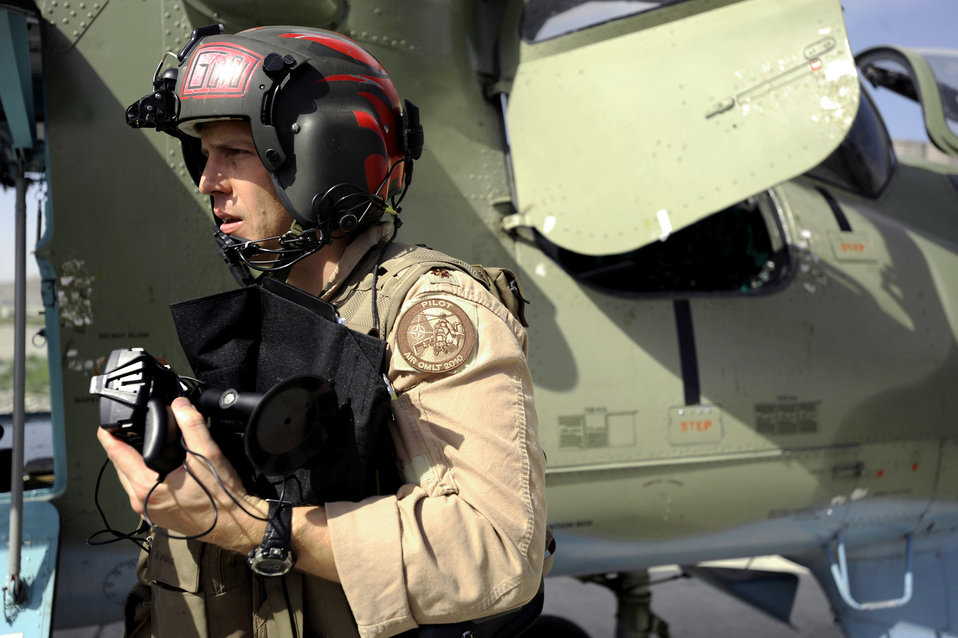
Airman leads joint Mi-35 attack helicopter adviser team for Afghan Air Corps

Maj. Caleb Nimmo exits an Mi-35 HIND E after returning from a live-fire training mission May 11, 2010, at Kabul International Airport, Afghanistan. Major Nimmo is a Mi-35 team lead assigned to the 440th Air Expeditionary Advisory Squadron.